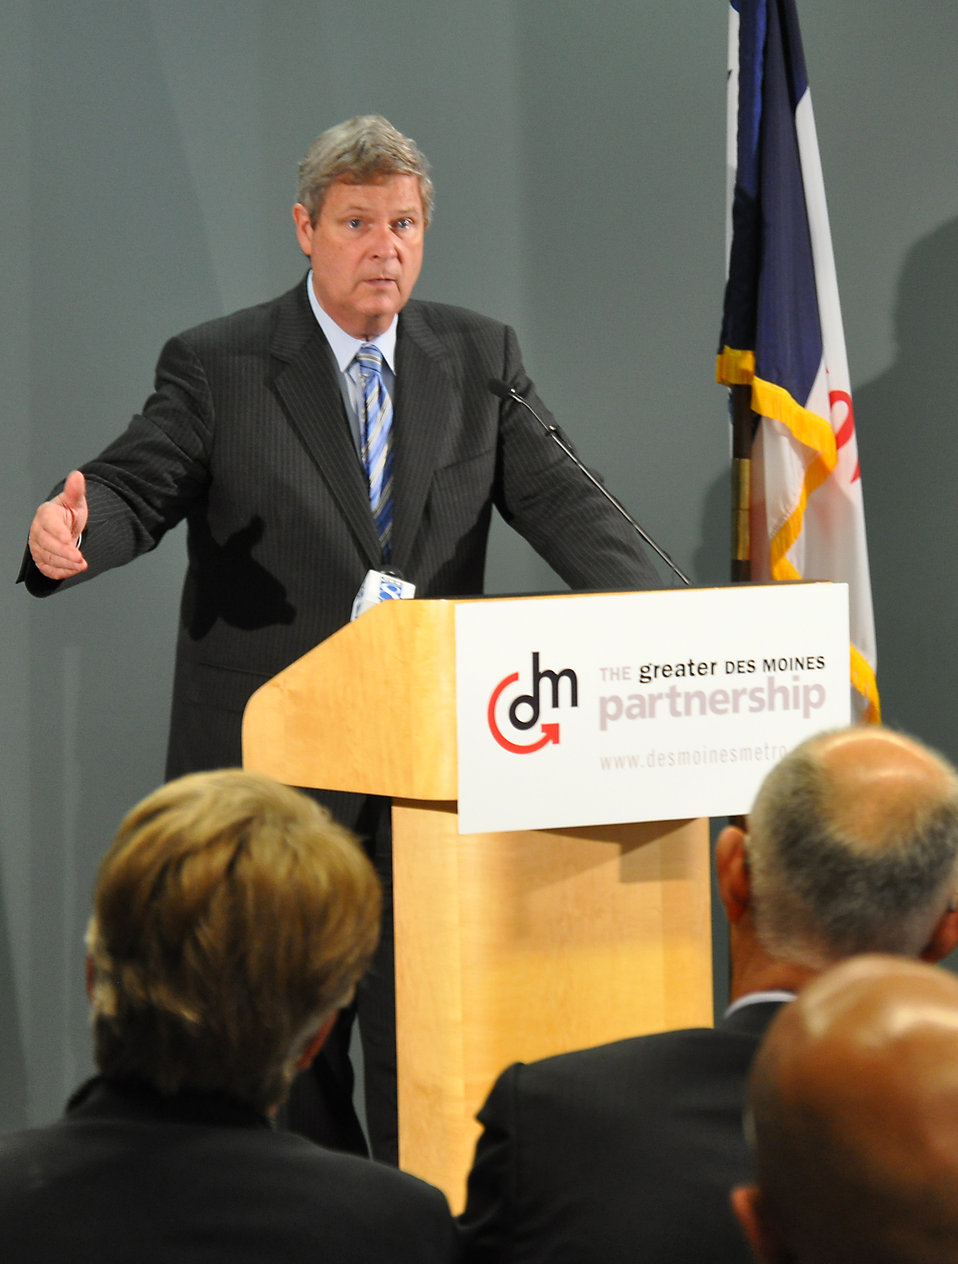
Agriculture Secretary Tom Vilsack meeting with business and community leaders in Des Moines, Iowa, on Tuesday, June 12, 2012 discussed how the continuing demand for American food and agricultural products abroad has led to the three best consecutive years for U.S. farm exports in our nation's history.

Vilsack also highlighted a report released this week by the White House Rural Council and the U.S. Department of Agriculture which notes progress that has been made in the agricultural economy and details steps the Obama Administration has taken to help strengthen the farm economy and support jobs in rural America.